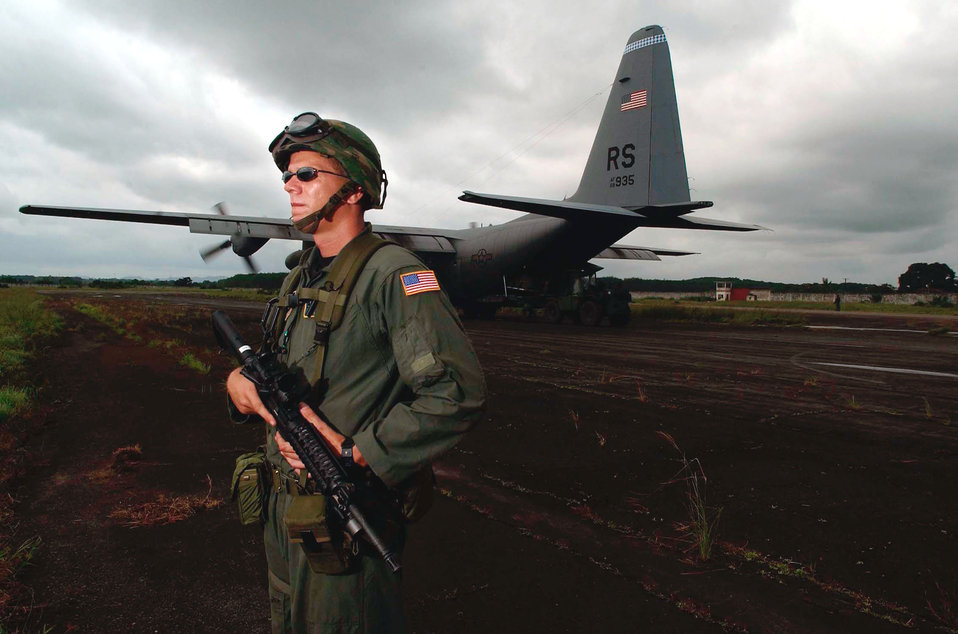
Sentry

MONROVIA, Liberia -- Staff Sgt. Ben Burk guards a C-130 Hercules at Roberts International Airport here Aug. 26. Burk is with the 398th Air Expeditionary Group in Senegal and deployed from Sembach Air Base, Germany.